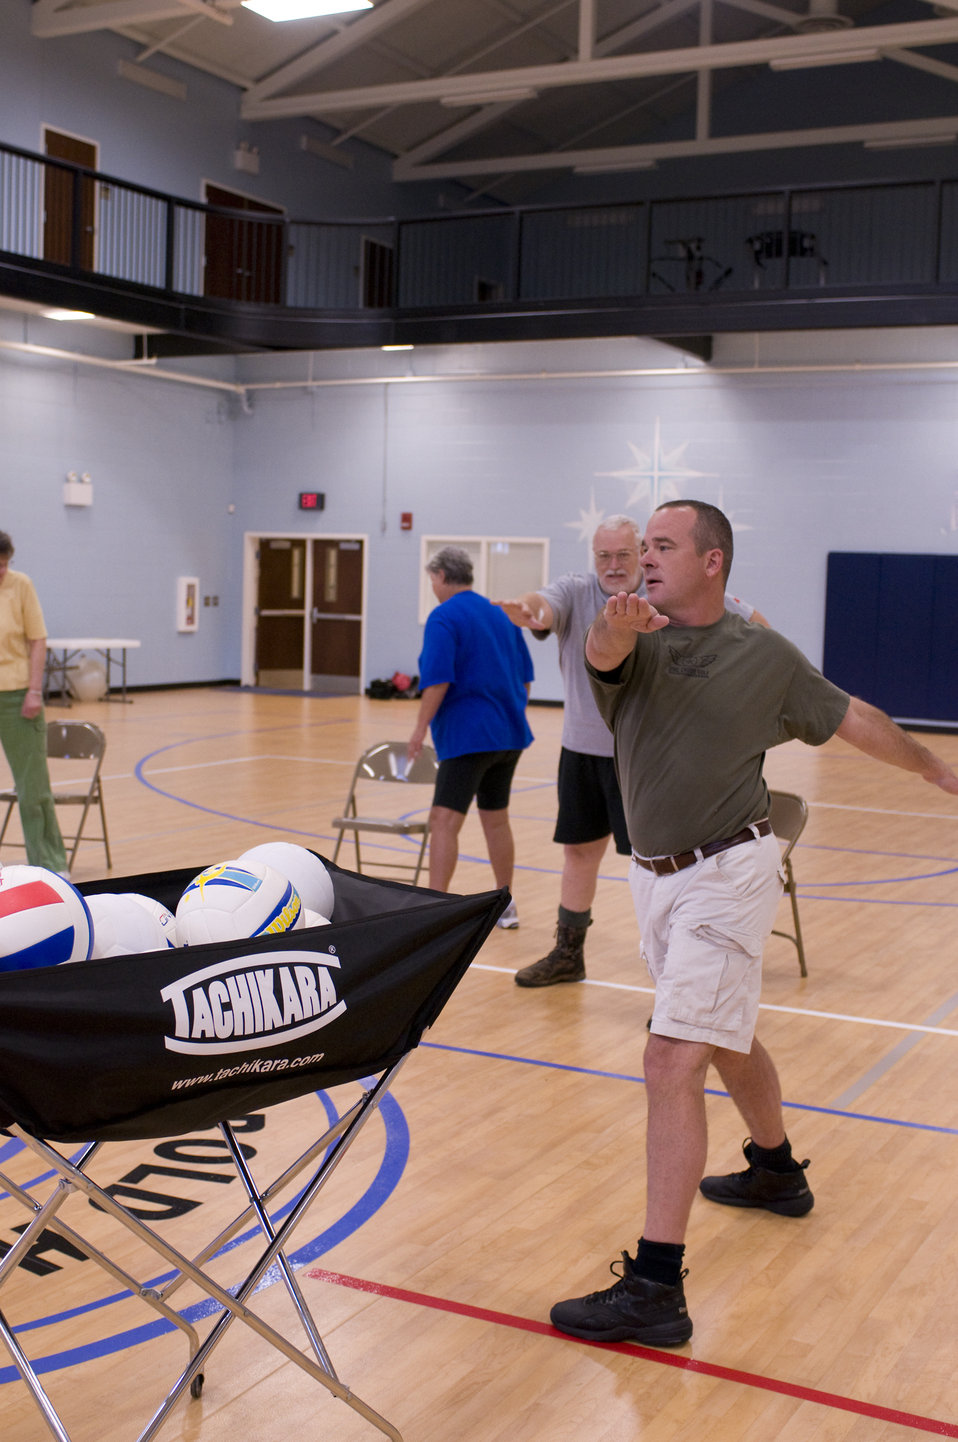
The older individuals pictured here on the wooden floor of an indoor basketball court, were warming up prior to participating in an exercise class consisting of stretching, and aerobic repetitive motion movements. In this particular view, two men with outstretched arms, were twisting their torso at the hips, which would help both to stretch their torso muscles, and raise their heart rate.